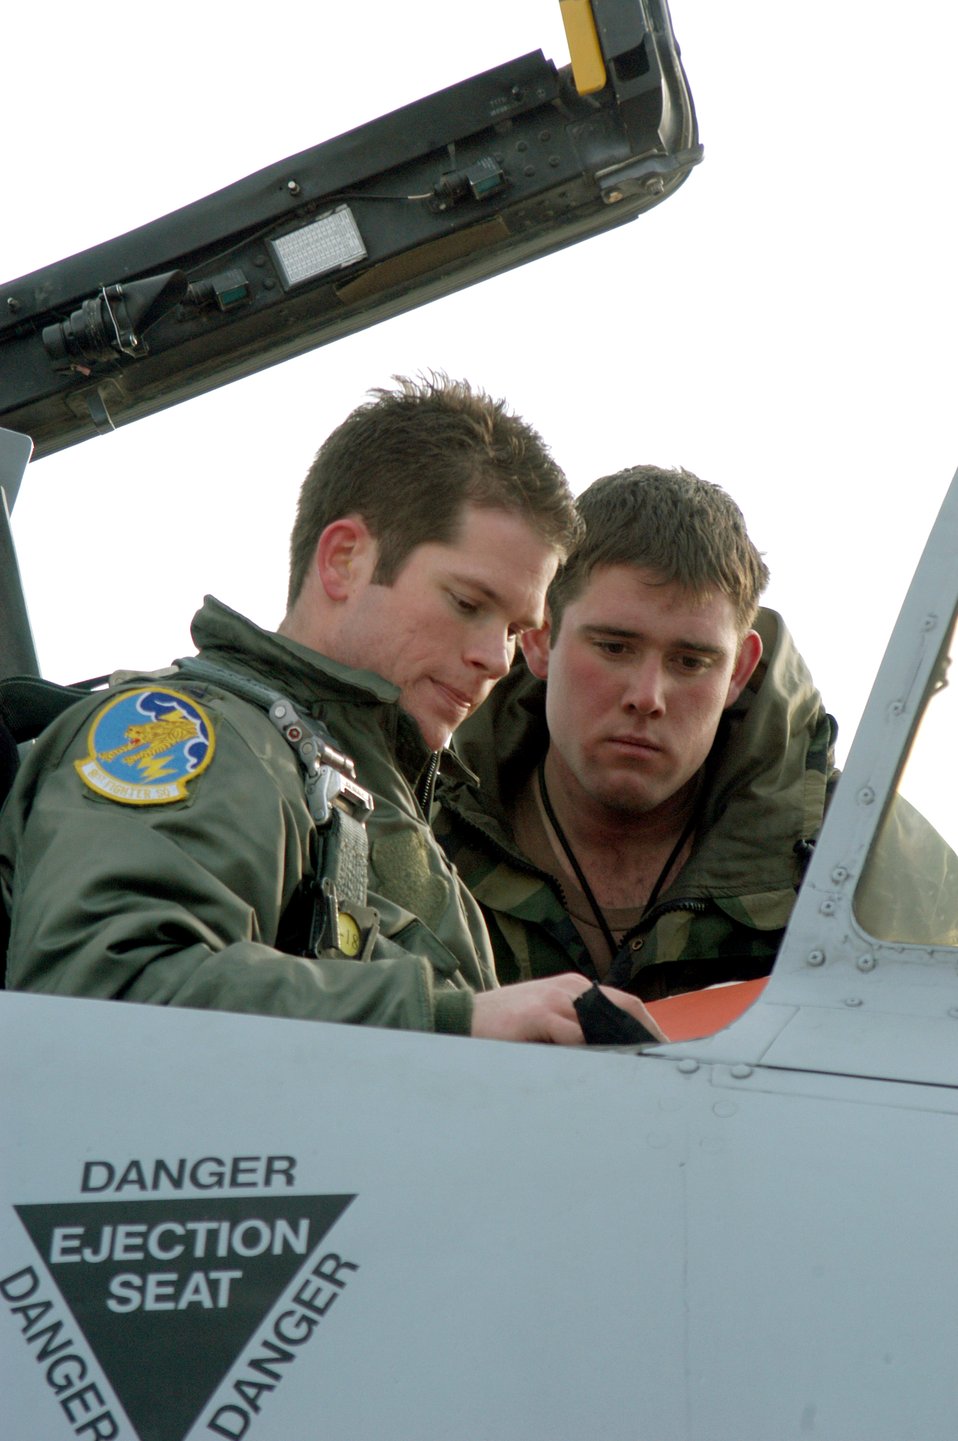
Whiteman Reserve wing teams up with Spangdahlem pilots

Capt. David Kirkendall, left, inspects maintenance forms for his A-10 Thunderbolt II, with 442nd Fighter Wing crew chief, Airman 1st Class Jeremy Cline on the Whiteman Air Force Base, Mo., flightline. Captain Kirkendall is a pilot with the 81st Fighter Squadron from Spangdahlem Air Base, Germany. He and several other A-10 pilots are training with Whiteman AFB's 442nd FW reserve unit until May to catch up on training missions that can't be met in Germany.